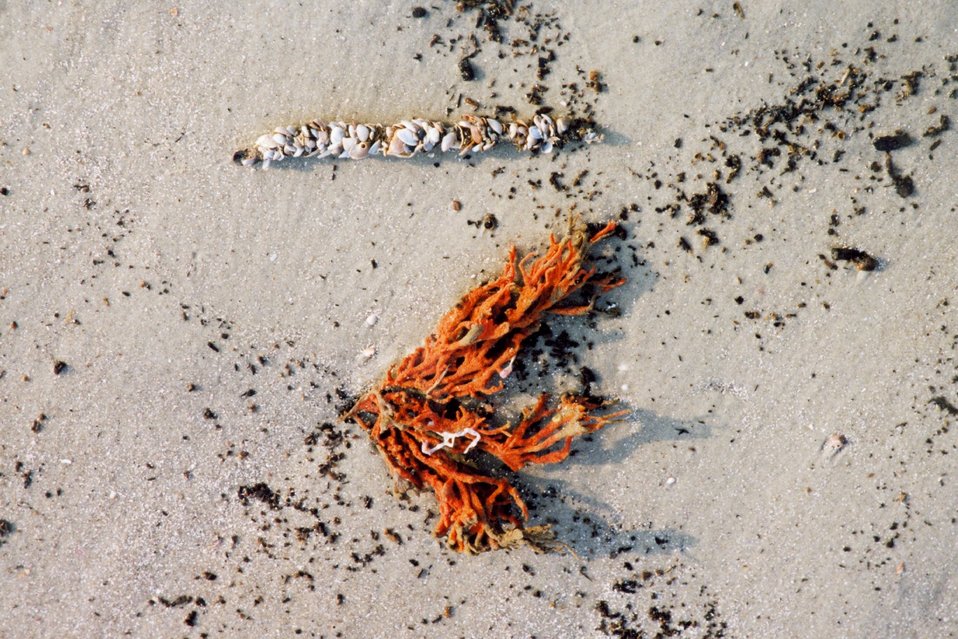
A small orange finger sponge (?) and a seeming bracelet composed of tiny shells and shell particles.